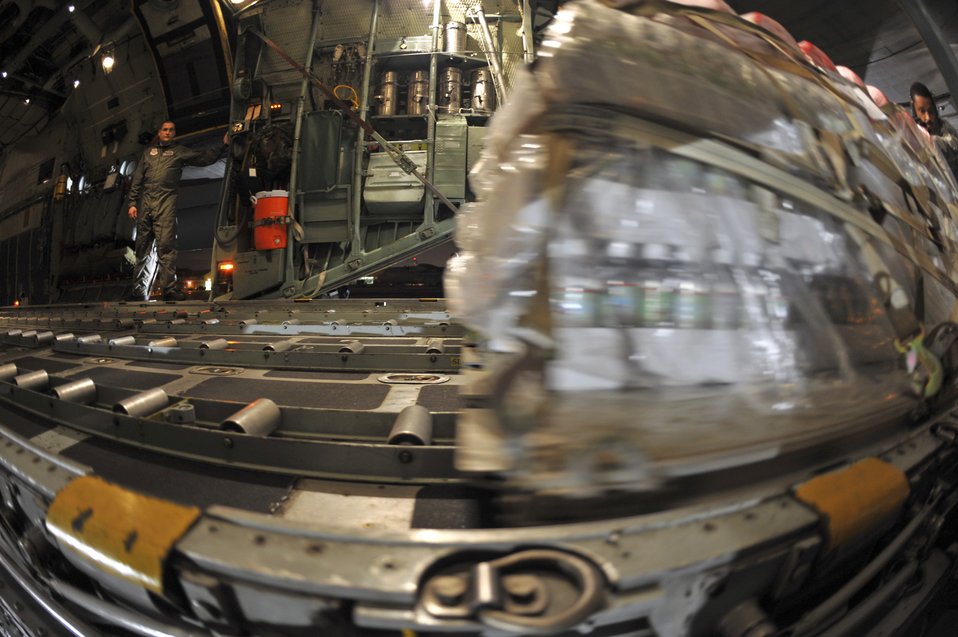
Haiti night mission

Airmen from the Puerto Rico Air National Guard‚Äôs 156th Airlift Wing load cargo onto a C-130E Hercules aircraft Jan. 16, 2010, to support the relief effort in Haiti in the aftermath of a devastating earthquake.